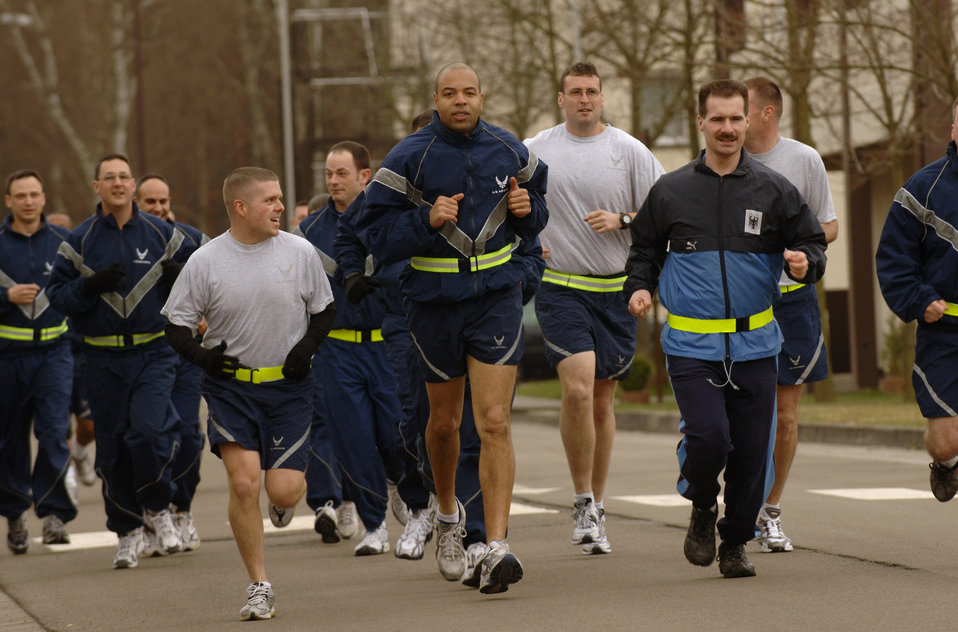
German sergeant enrolls in USAFE NCO Academy

German air force Master Sgt. Holger Fels joins fellow Kisling Noncommissioned Officer Academy students during a daily physical training session April 26 at Kapaun Air Station, Germany. Sergeant Fels, a German NCO Aaademy instructor in Appen, Germany, voluntarily enrolled in the six-week academy course designed for U.S. Air Force technical sergeants to prepare for a four-year special duty assignment as an exchange instructor at the Senior NCO Academy at Maxwell Air Force Base, Ala.